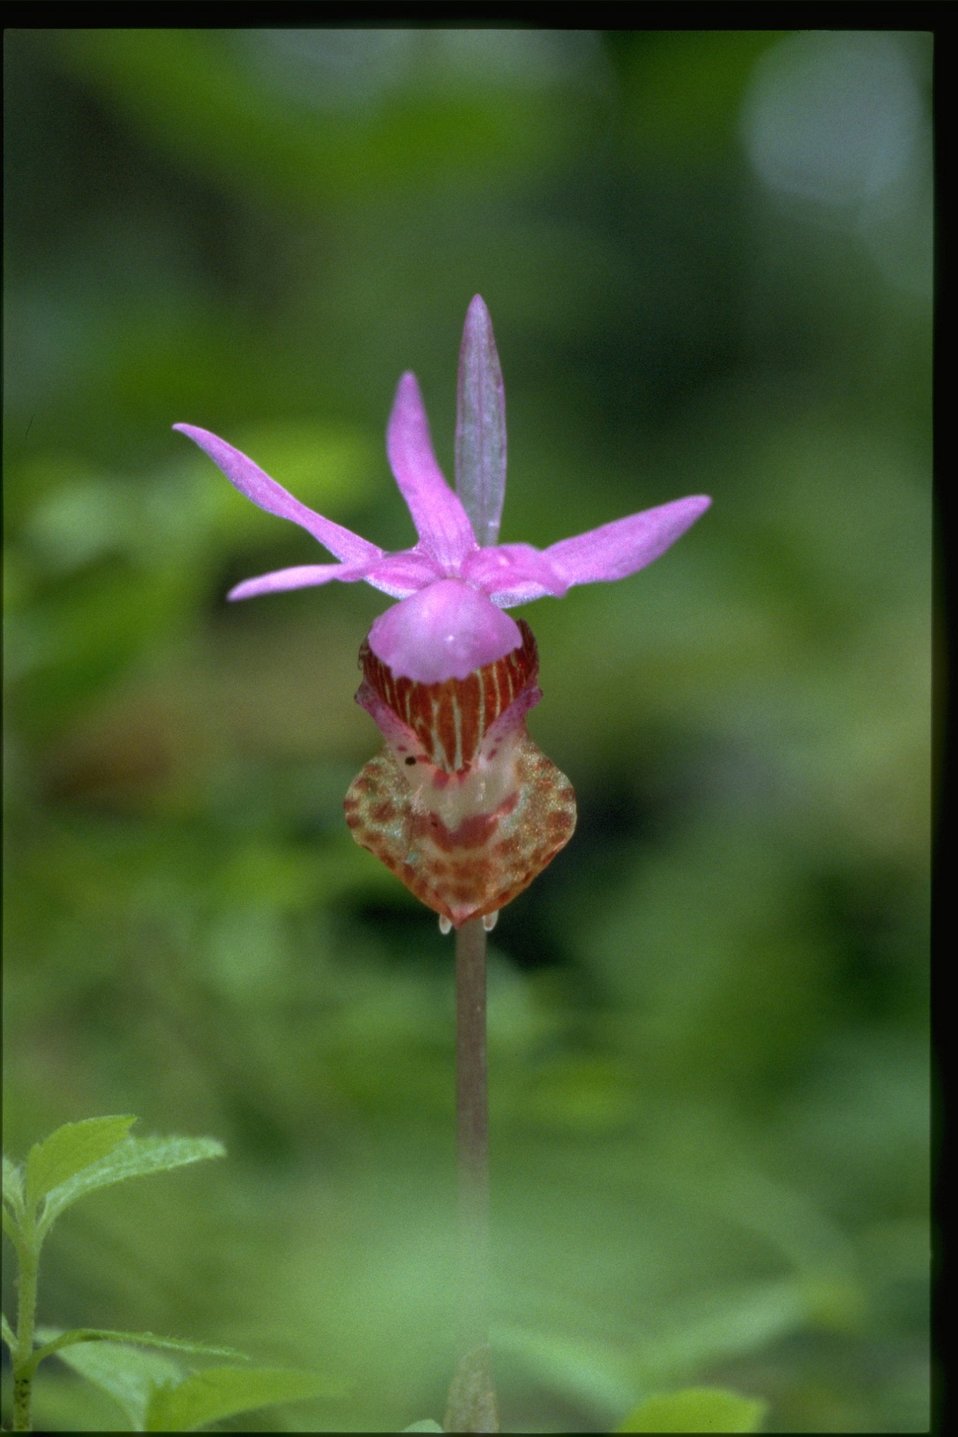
Closeup shot of Calypso bulbosa.